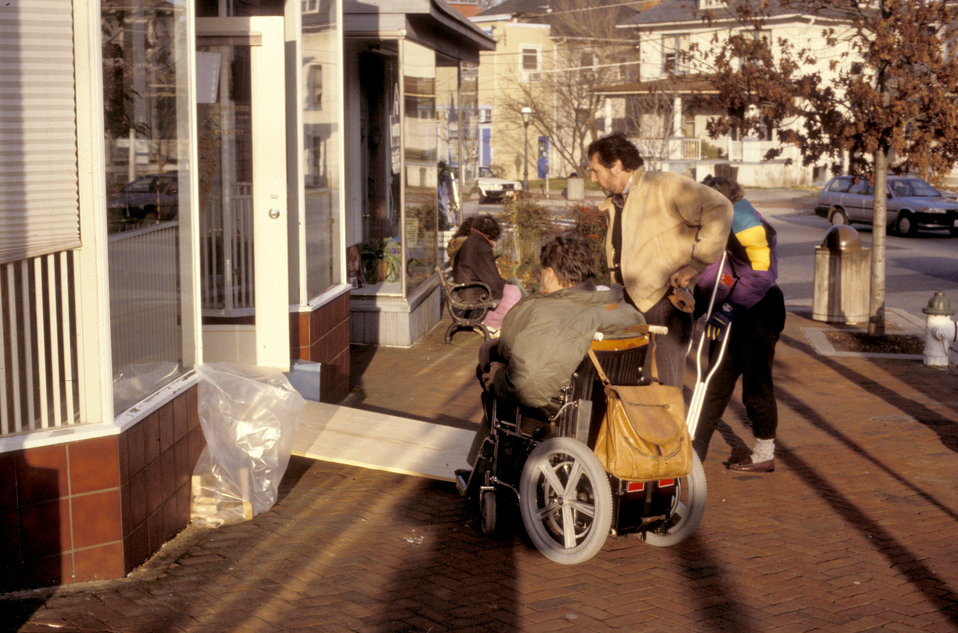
In this 1993 image, the front of a women's clinic revealed a front door that was accessed via a two-step stoop, which made accessibility an issue for the wheelchair-seated man shown here who'd just exited the premises. Visits by individuals having problems with mobility, prompted the installation of a temporary plywood ramp. Though the temporary ramp made access easier for the mobility-challenged, it was constructed in such a way as to make it a dangerous, though short-term solution (see PHIL 9022 - 9025). PHIL image 9027 - 9029 depicted a long-term, permanent solution using a brick, concrete, and metal ramp. It was not the perfect solution, for it lacked adequate maneuvering room near the clinic doorway. It also clearly appeared as an add-on, or after-the-fact solution that protruded into the wide sidewalk, while attempting to blend in with the existing buildings by using brick, colored concrete, and wrought iron rails. Stairs had also been provided.